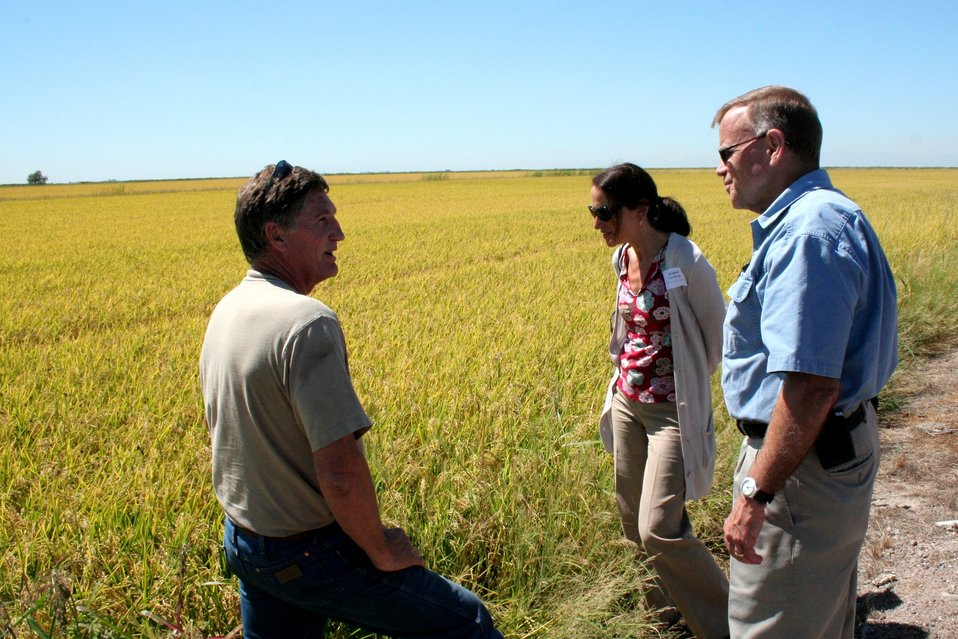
FDA's Rice Tour: Looking for Insights on Arsenic (0814)

FDA Commissioner Margaret A. Hamburg and colleagues visited research facilities and rice farms in California on Sept. 4-5, 2013 in an effort to gain a greater understanding of the presence of arsenic in rice. At the Lyle Job farm in Richvale, Calif., from left, Job, Hamburg and FDA's Deputy Commissioner for Foods and Veterinary Medicine Michael Taylor survey a field of rice close to harvest time. For more information, read the FDA Voice blog:

• On Farms and in Labs, FDA and Partners Are Working to Get Answers on Arsenic in Rice